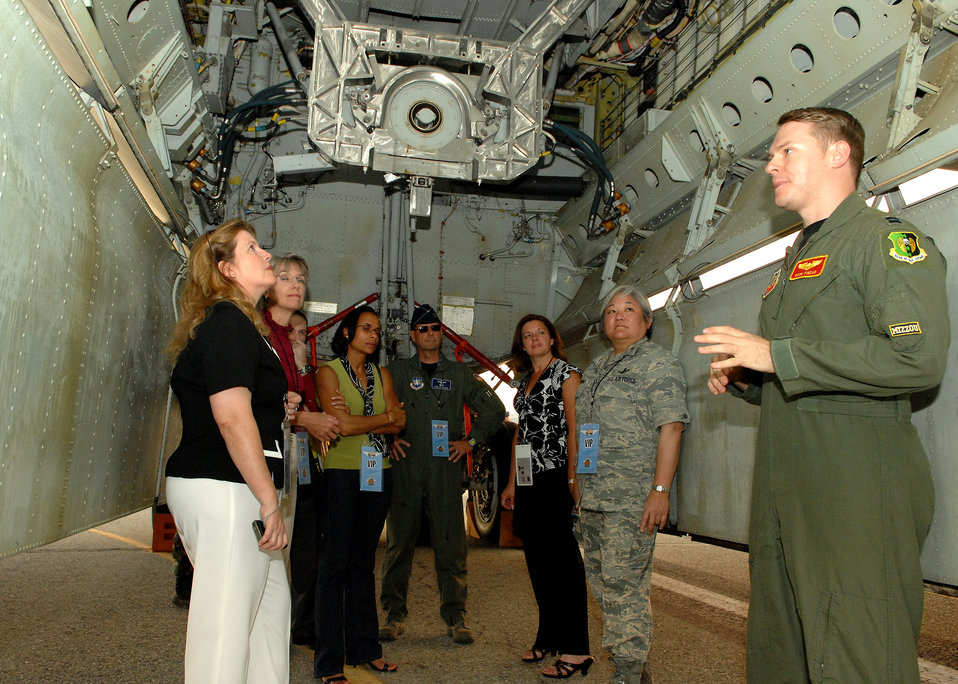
Wings over Long Beach

Capt. Mark Pindar briefs visitors in the bomb bay of a B-52 Stratofortress during the Wings Over Long Beach airshow Nov. 15 at Long Beach Airport, Calif. The airshow was part of Air Force Week Los Angeles to showcase the Air Force, its people and the mission throughout the region. Captain Pindar is a B-52 pilot with the 23rd Bomb Squadron from Minot Air Force Base, N.D.